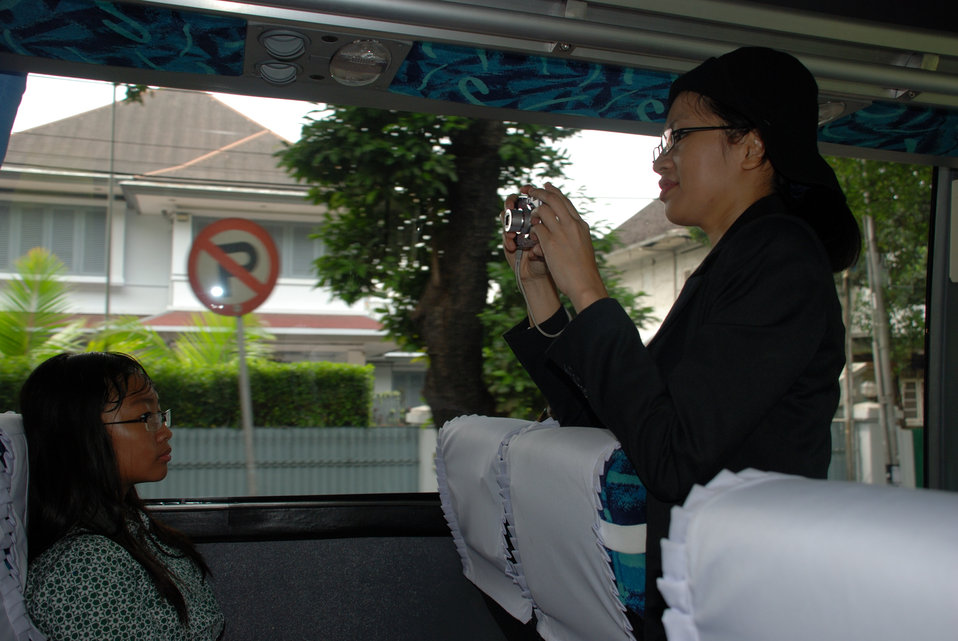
Behind the Scenes: Indonesian Students Prepare for Secretary Clinton's Arrival

Journalist and Blogger Nenden Novianti of VivaNews takes a picture on
the Menteng Elementary School No. 1 student bus in Jarkarta, Indonesia during the visit of U.S. Secretary of State Hillary Rodham Clinton February 18, 2009.